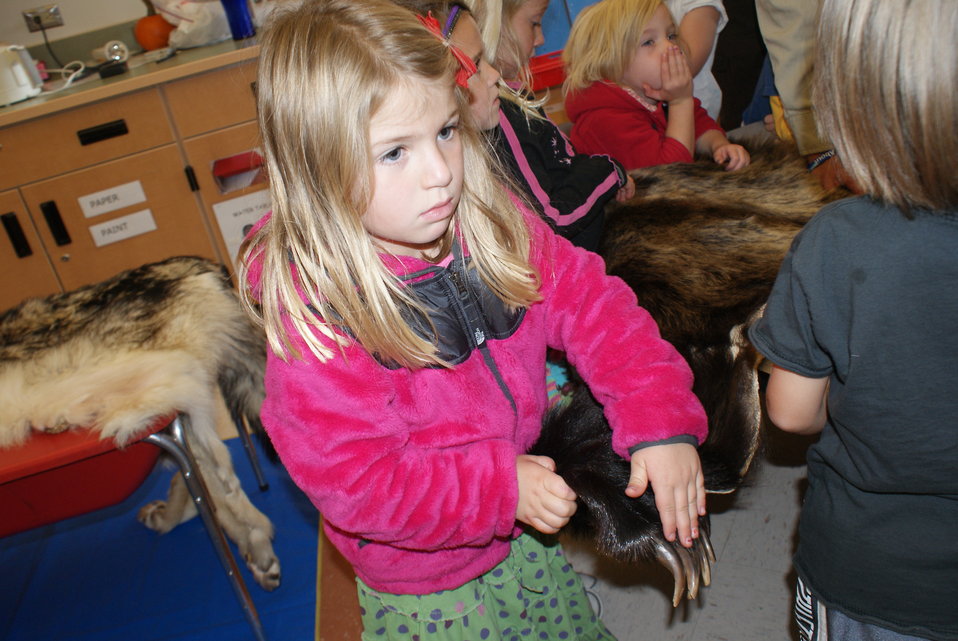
Scientists in the Community Program

U.S. Fish and Wildlife Service Mountain-Prairie Region Deputy ARD for External Affairs, Matt Kales, introduces early childhood education students at William Roberts Elementary School in Denver to some of Colorado's native and historic wildlife species.